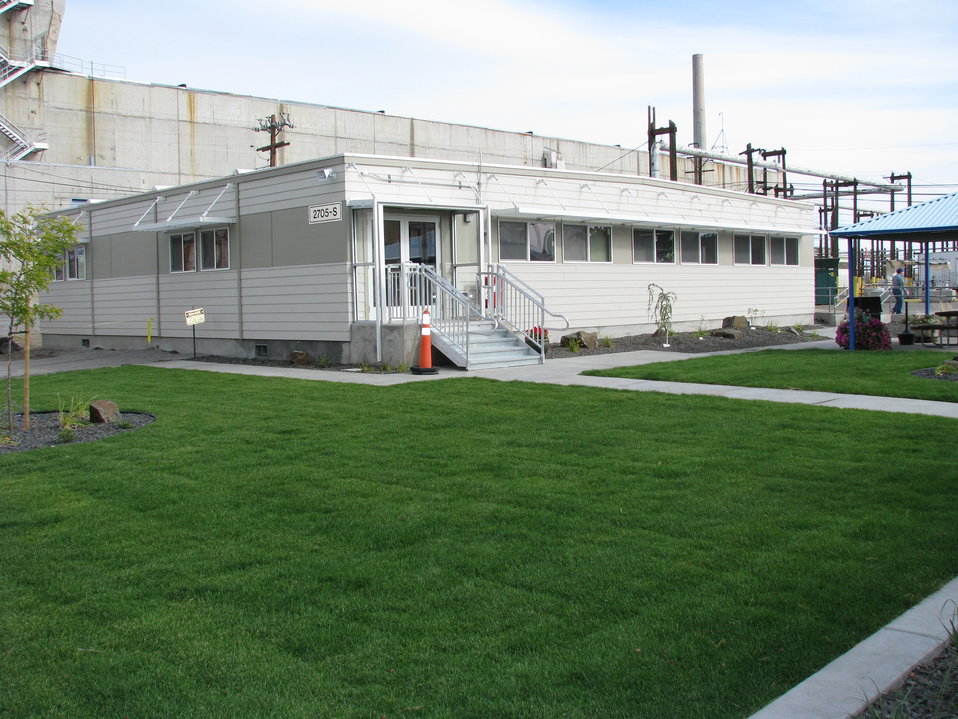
2705-S complete